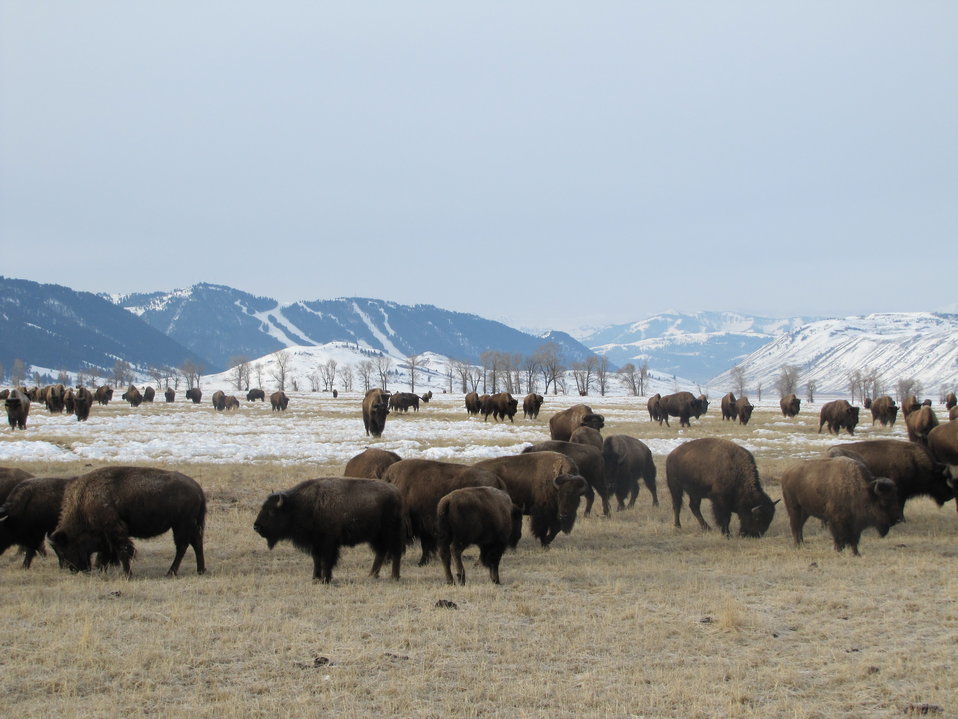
Bison on the National Elk Refuge

Bison on the elk feedlines have at times disrupted supplemental feeding operations and displaced and injured elk. To minimize conflicts between bison and elk, managers have provided separate feedlines for bison since 1984.